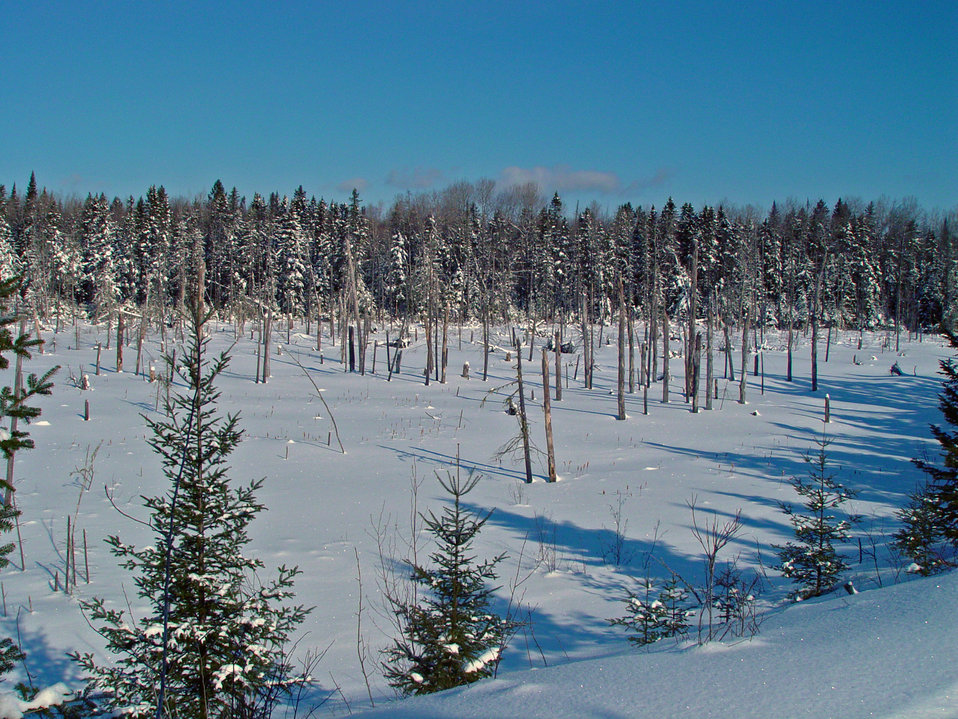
Winter on the refuge

Aroostook National Wildlife Refuge, ME.